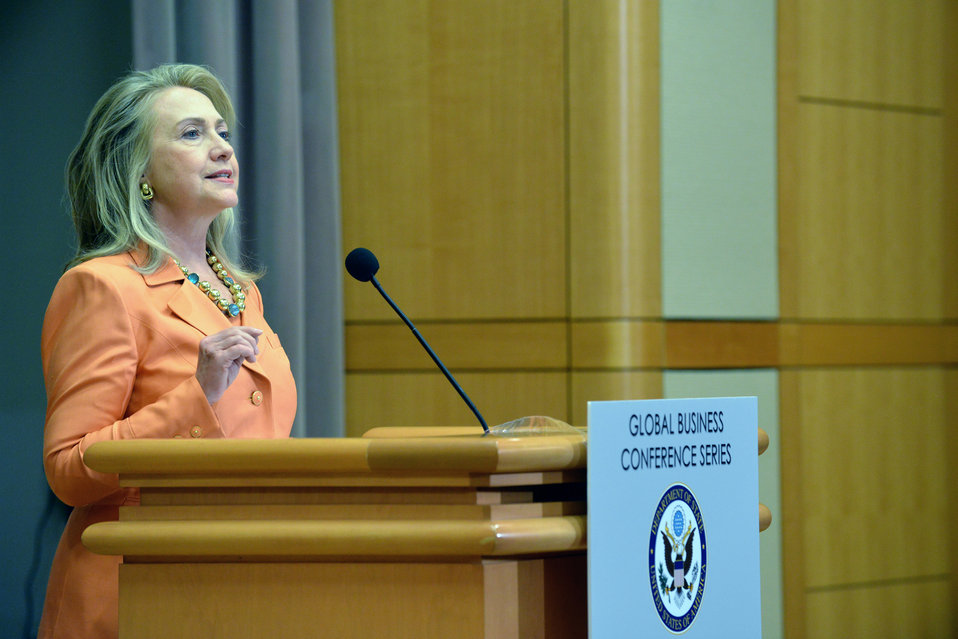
Secretary Clinton Delivers Remarks at the Global Infrastructure Conference

U.S. Secretary of State Hillary Rodham Clinton delivers remarks at the Global Infrastructure Conference at the U.S. Department of State in Washington, D.C., September 20, 2012.